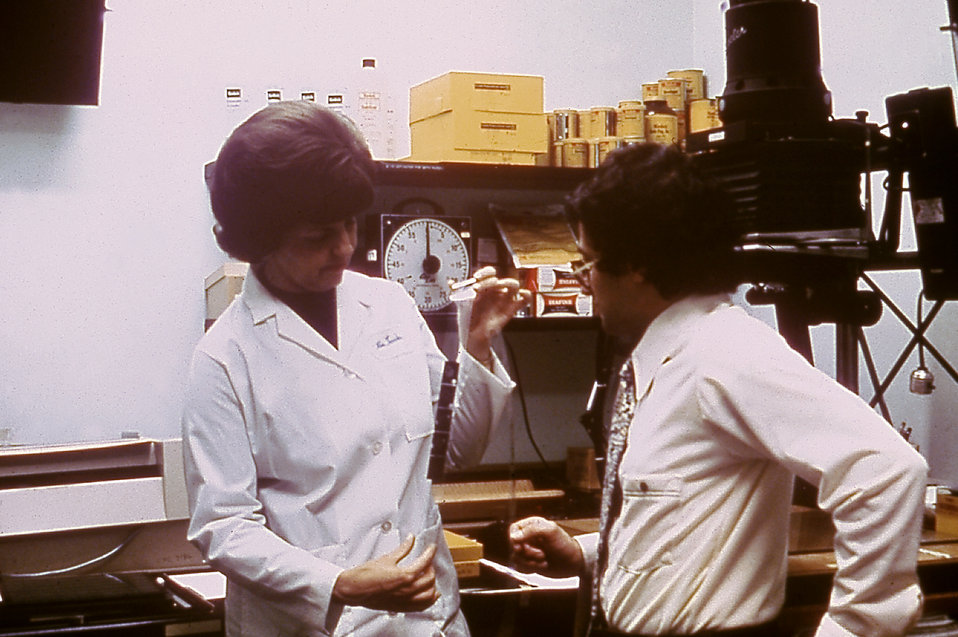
Here a technician is examining a film negative for suitable 'spreads' during chromosomal analysis of amniotic fluid.